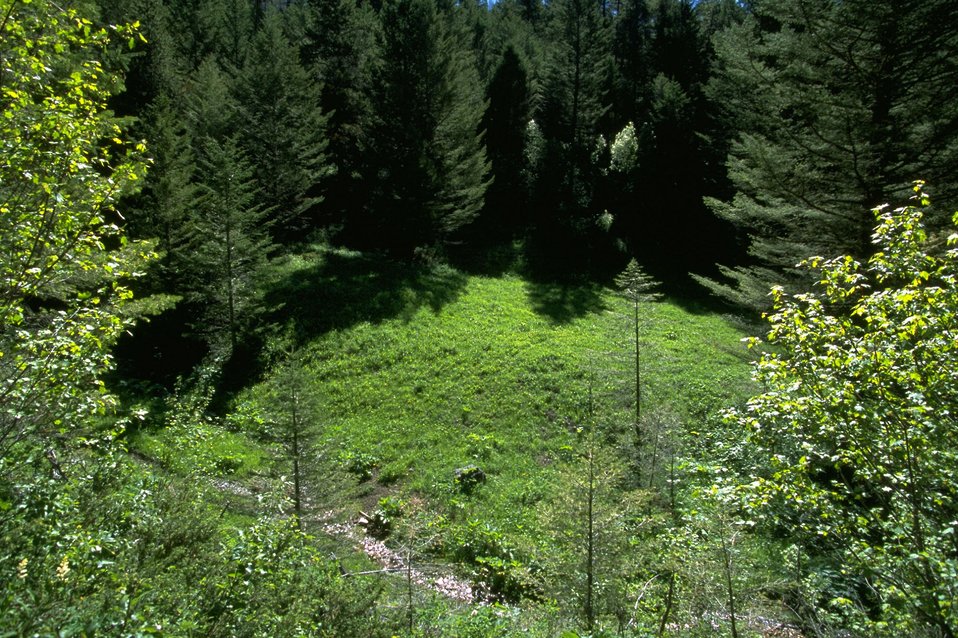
A mountain meadow in the Judith Mountains